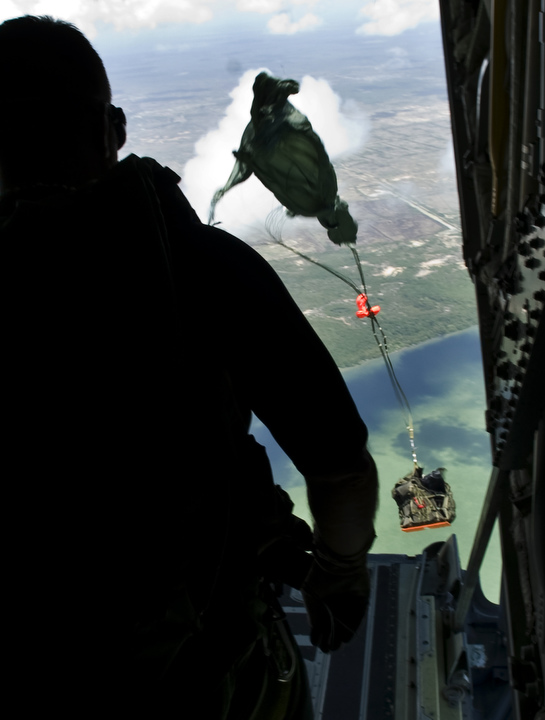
Operation Southern Partner

Pararescueman and jump master Senior Master Sgt. Michael Fleming watches as a rigged alternate method zodiac, or RAMZ, package leaves his C-130J Hercules June 9 as part of a demonstration for members of the Belize National Coast Guard and local media during Operation Southern Partner.